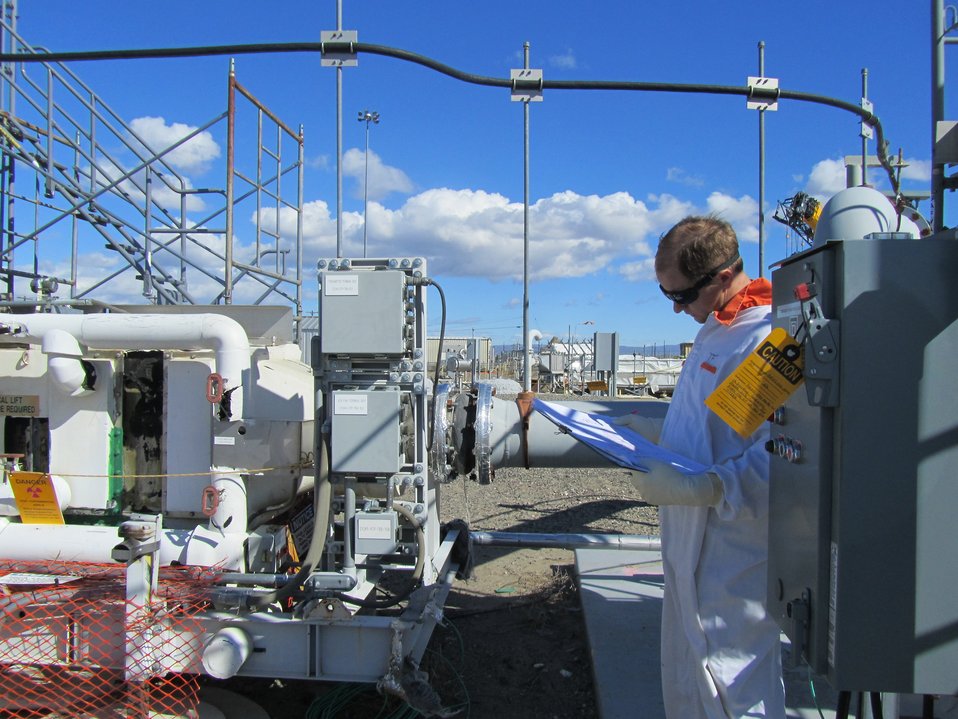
ORP Recovery Act work

A Hanford tank farms engineer inspects equipment to determine if the installed systems match what is shown on drawings of the double-shell tank farms. Recovery Act-funded work to verify the accuracy of the drawings and update them as needed is now more than 80 percent complete.